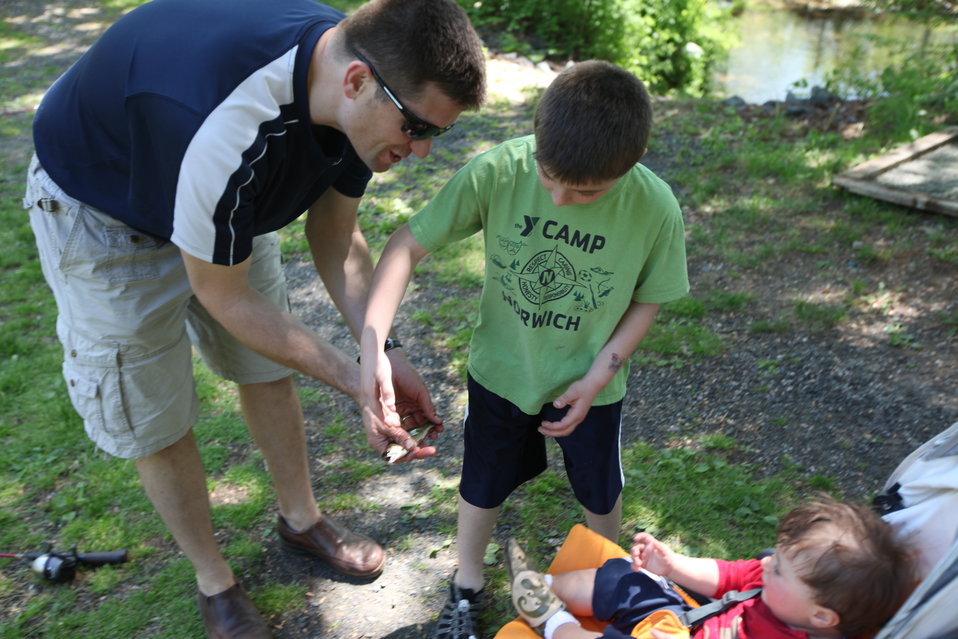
Youth Fishing Derby 2012

Megan Nagel/USFWS